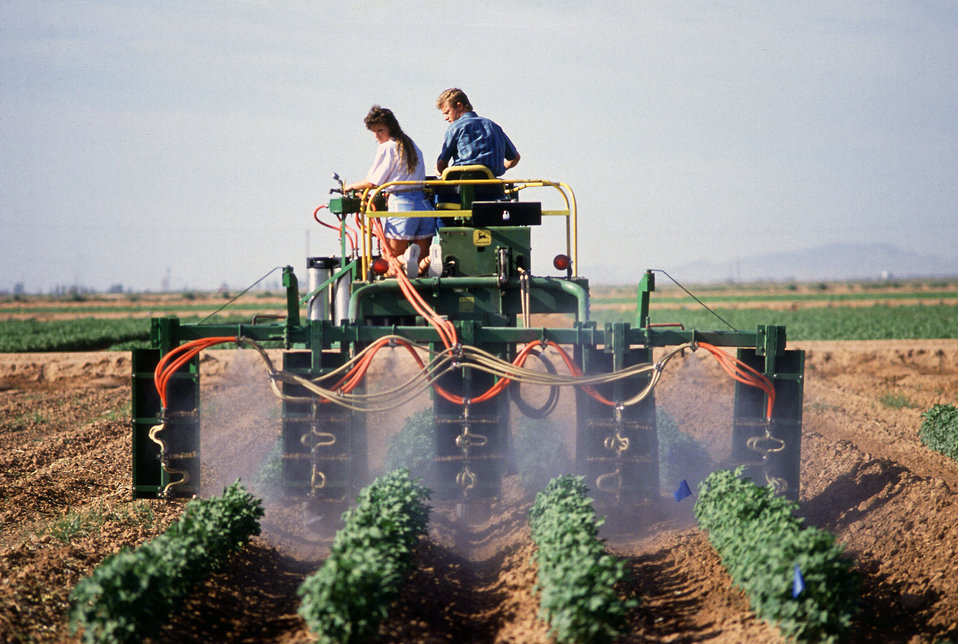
While extracts from exotic plants may thwart whiteflies in the future, other remedies may be right in your kitchen. U.S. Department of Agriculture (USDA) Agricultural Research Service (ARS) researchers in Arizona found that a mix of common liquid dishwashing detergent and cooking oil kills sweet potato whiteflies, as well as several common home garden pests. At test plots in Maricopa, AZ technician Barbara Hefner and biological aide Bryan Merrill spray a cotton field with a fine mist of vegetable oil and dishwashing detergent.